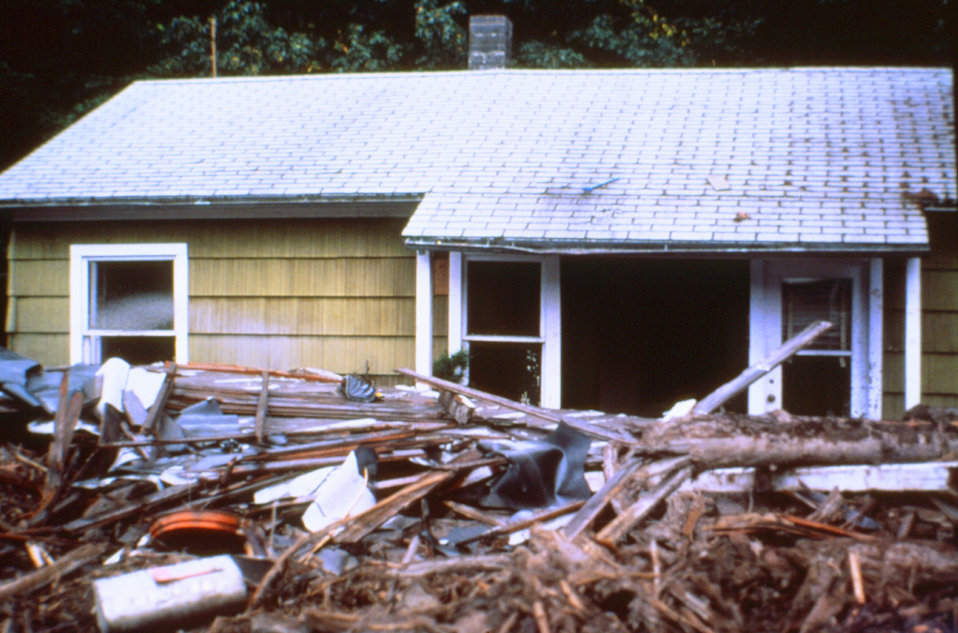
This southwestern Washington home was destroyed as a result of the May 18, 1980 Mount St. Helens volcanic eruption.